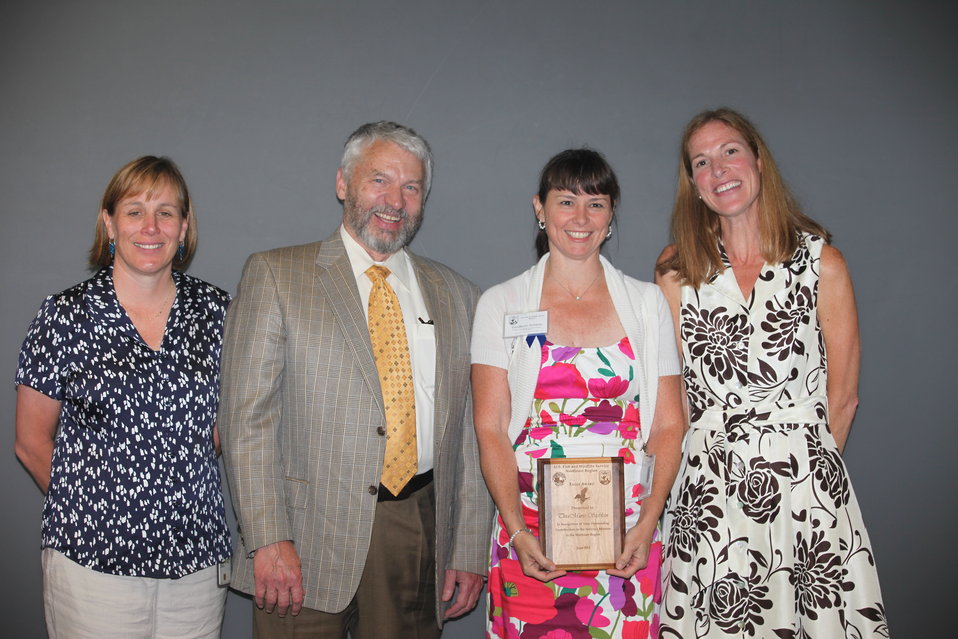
TinaMarie Steblein, Information Technology Management, recieved an Eagle Award.
From left to right: Deputy Regional Director Deb Rocque, Deputy Director Rowan Gould, TinaMarie and Regional Director Wendi Weber